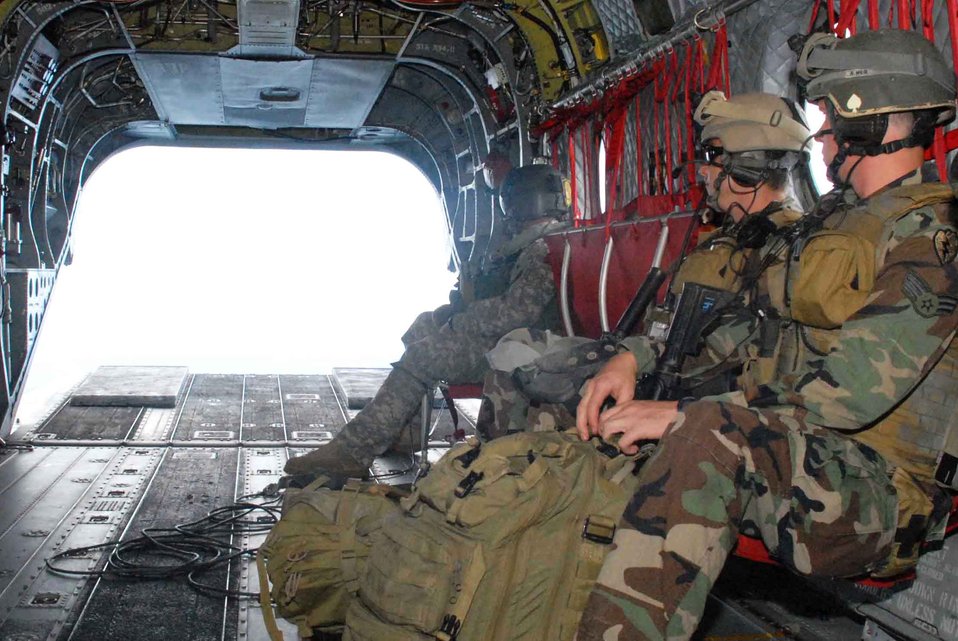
Airmen prepare for landing

Tactical air control party Airmen prepare for landing after a 30-minute ride on an Army National Guard CH-47 Chinook during training June 23-26. 25th Air Support Operations Squadron Airmen camped at Wheeler Army Airfield's East Range near Hickam Air Force Base, Hawaii, to sharpen proficiencies necessary for upgrade training to become combat mission-ready joint terminal attack controllers. It's training like this that ensures safe and reliable wartime readiness.